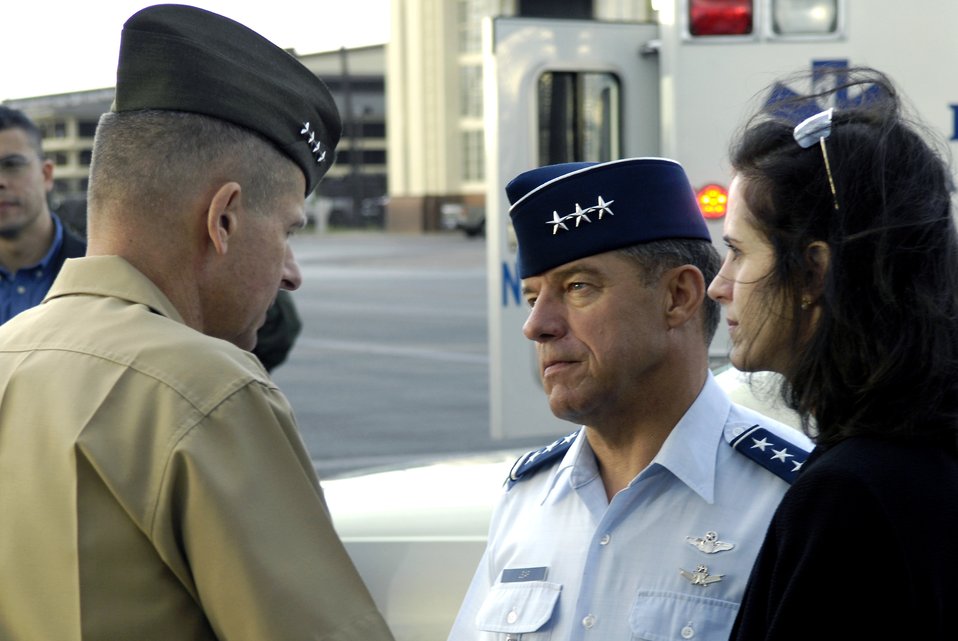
General Pace visits Hawaii

Gen. Peter Pace, chairman of the Joint Chiefs of Staff, talks with Lt. Gen. Dan Leaf, deputy commander of Pacific Command, and his wife Amy, upon arriving at Hickam Air Force Base, Hawaii, on Feb. 8.